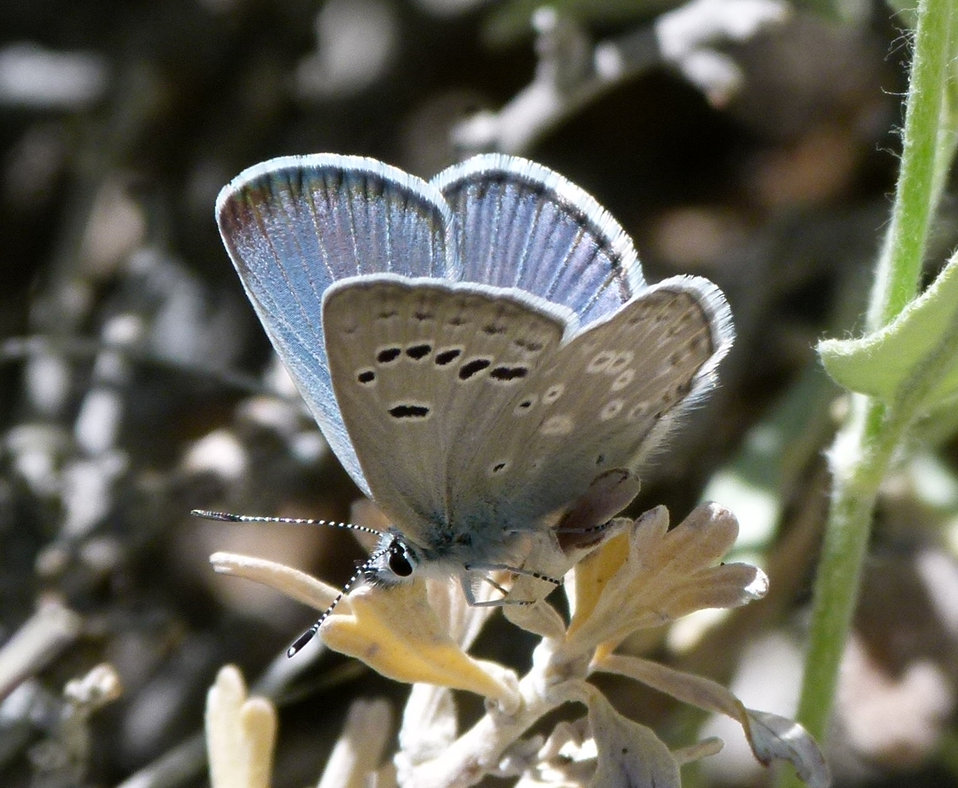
Spring Mountains icarioides blue (Plebejus icarioides austinorum)